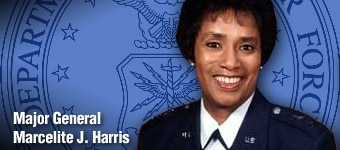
MAJOR GENERAL MARCELITE J. HARRIS